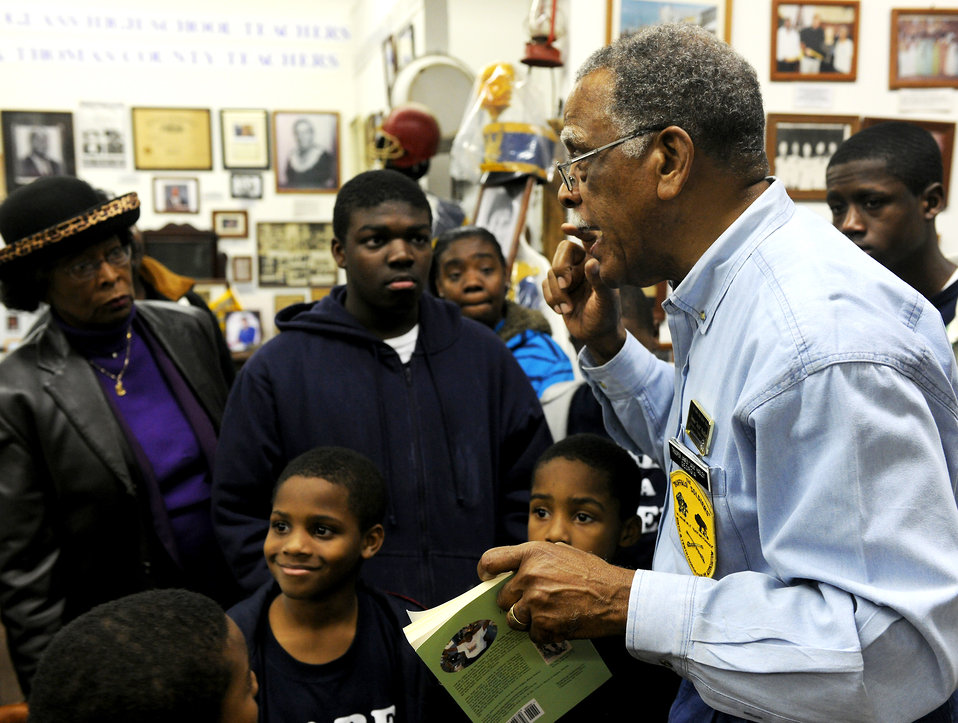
Chief preserves black history

Retired Chief Master Sgt. James